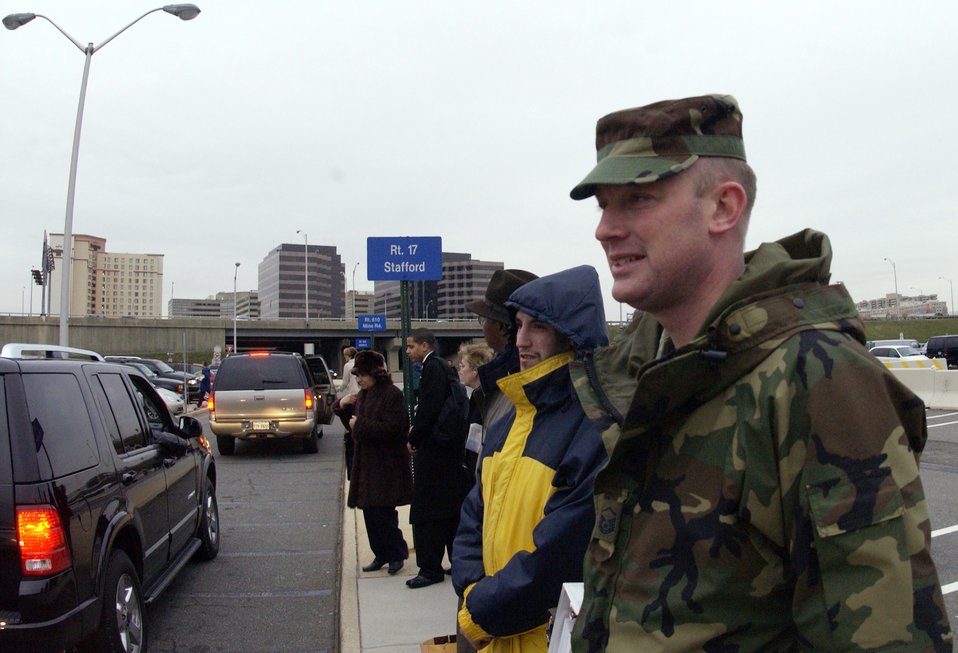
Slugging at the Pentagon

ARLINGTON, Va. (AFPN) -- Master Sgt. Roy Blanchard waits for a ride home Jan. 17 to Fredericksburg, Va. Commuters around the national capital region use